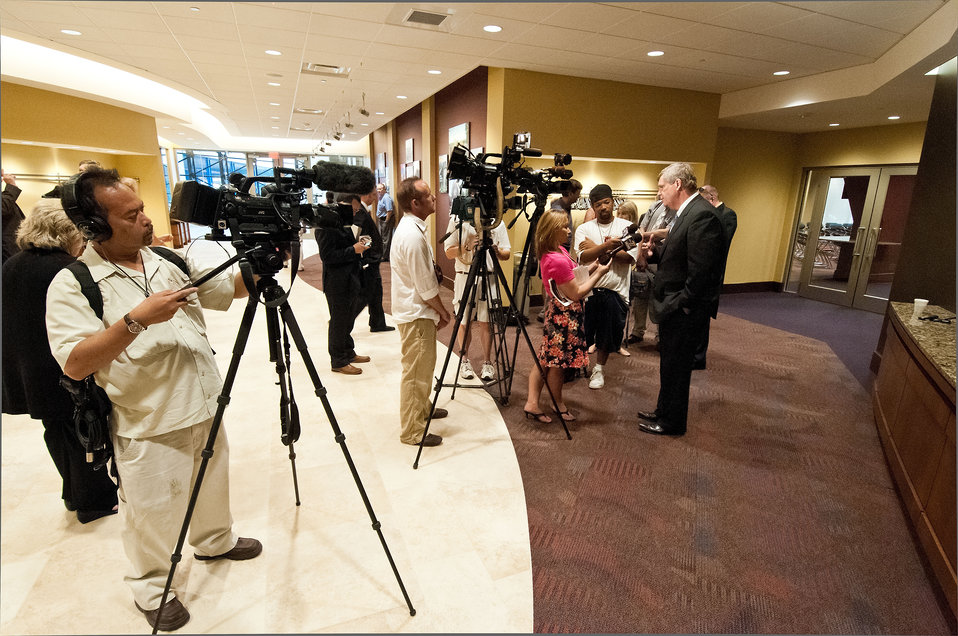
Agriculture Secretary Tom Vilsack spoke to the media after his Investments in Rural Pennsylvania speech about the U.S. Department of Agriculture (USDA) Rural Development (RD) Rural Utilities Service (RUS) Proposed Energy Efficiency Rule at the Alleghany Electric Cooperative, Inc. Pennsylvania Rural Electric Association in Harrisburg, PA on Tuesday, July 17, 2012.